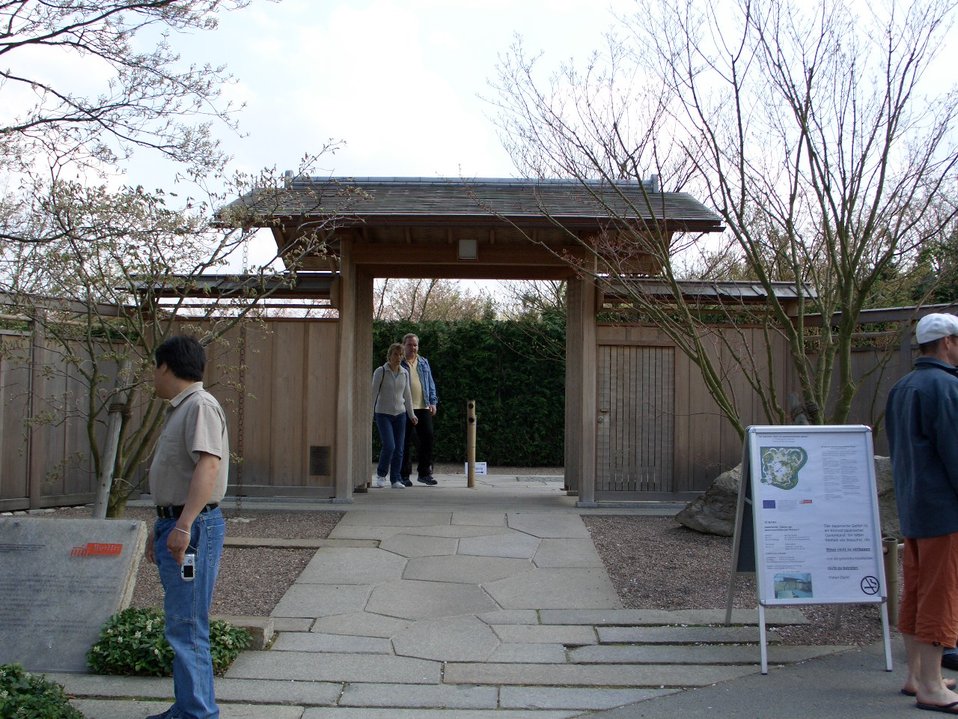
Deutsch: Eingang Japanischer Garten im Erholungspark Marzahn